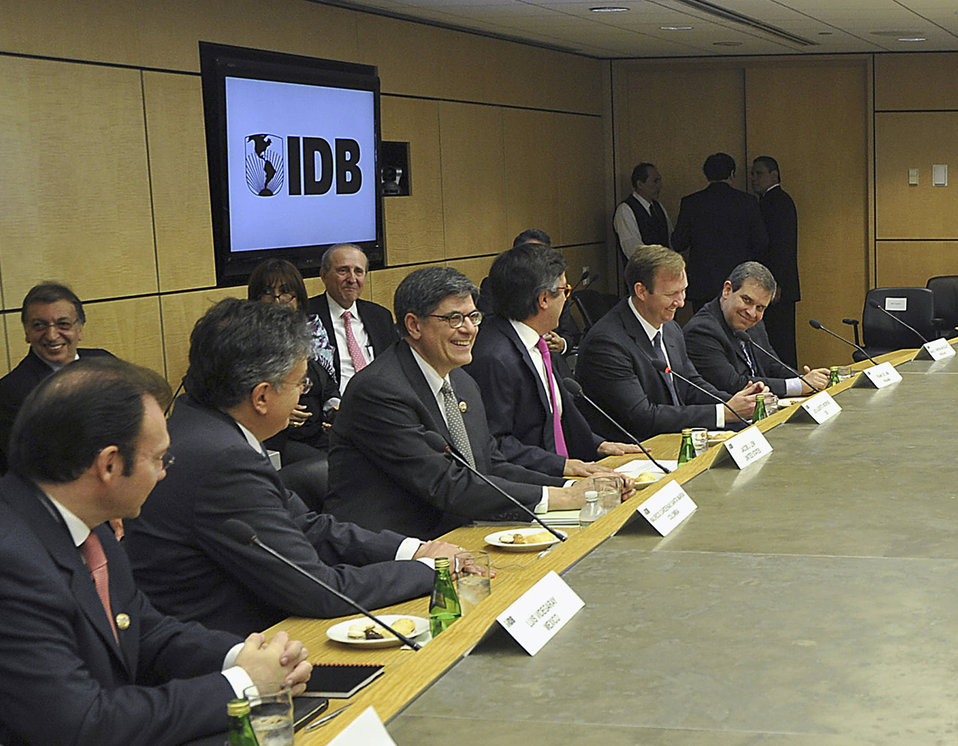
Secretary Lew at the Inter-American Development Bank

Secretary Lew attends a meeting with regional finance ministers at the Inter-American Development Bank (IDB) during World Bank and IMF Spring meetings April 18, 2013